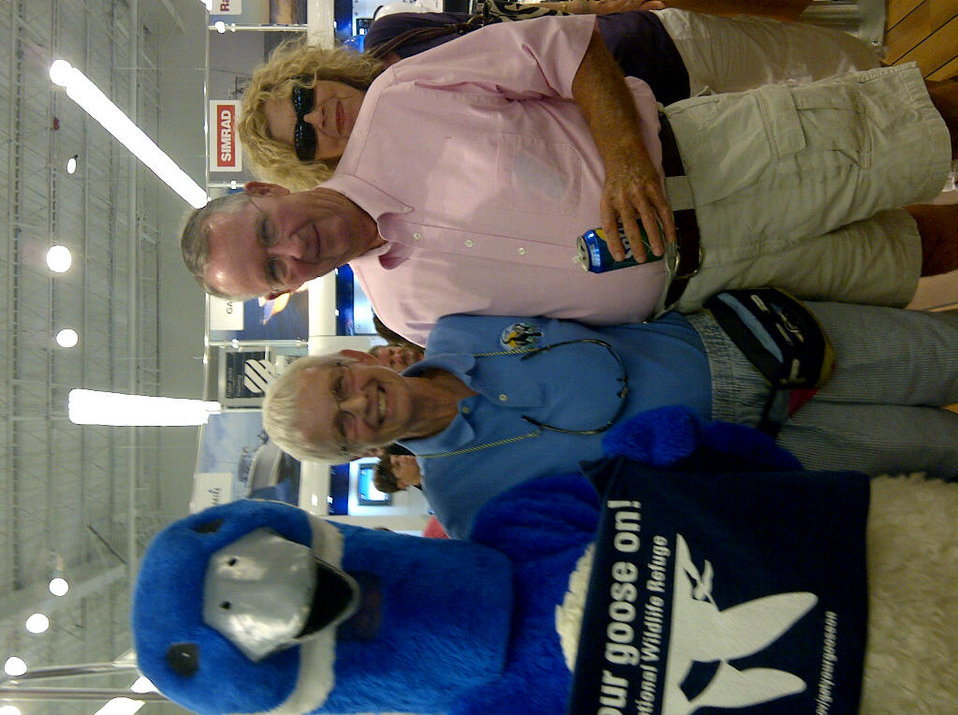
Get Your Goose On!